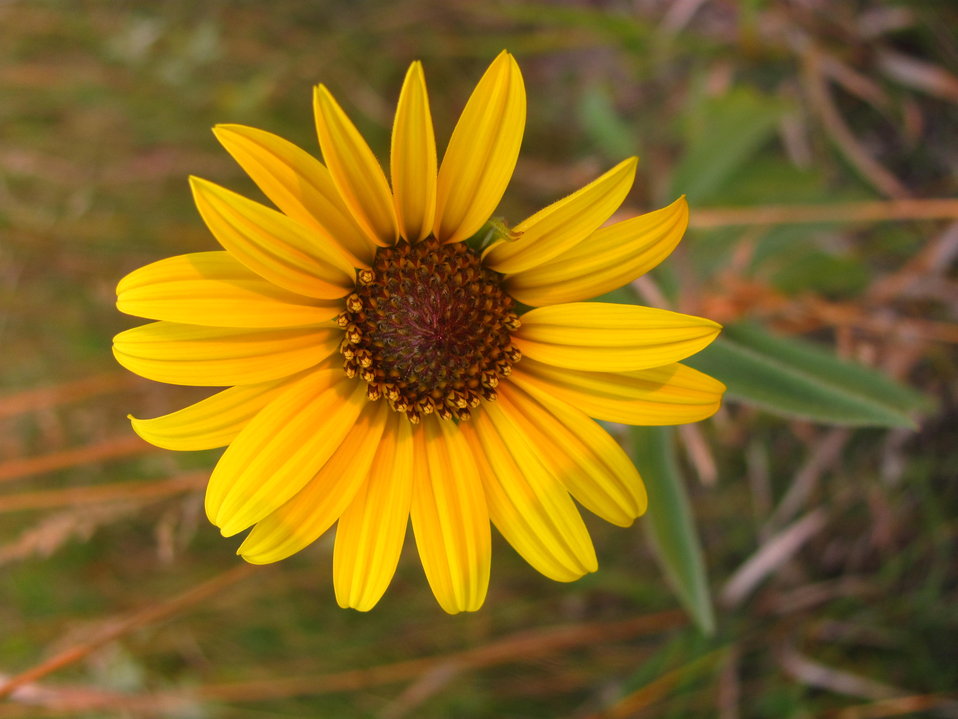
Maximillian Sunflower

Here at Chase Lake NWR we just wanted to remind you to stop, smell, and admire all the beautiful prairie flowers that are in bloom. Photographed here is Maximillian Sunflower (Helianthus maximiliani). It grows statewide and is common in upland prairies. These sunflowers seem to brighten up the prairie and our summer days!